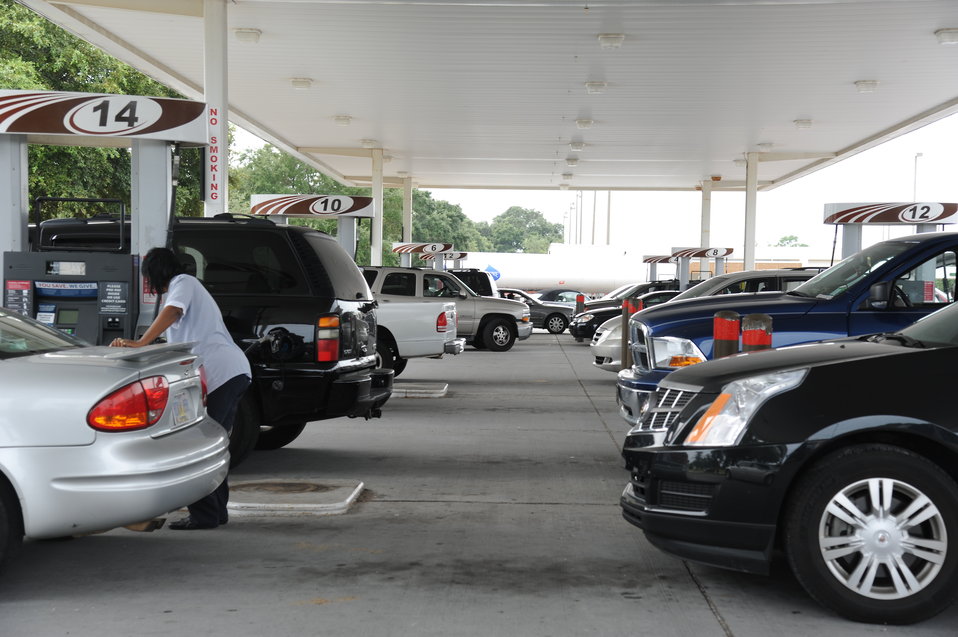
Keesler takes preventative measures to prepare for Isaac

8/28/2012 - People line up to fuel their vehicles at the Express Aug. 27, 2012, at Keesler Air Force Base, Miss. Keesler personnel are taking preventative measures to prepare and protect themselves and Keesler's assets as the base commander has declared HURCON 3, meaning destructive winds of 58 mph or greater are expected as Isaac approaches.